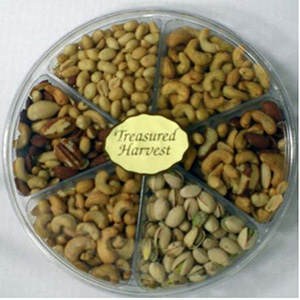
RECALLED – Roasted and Salted Pistachios

July 10, 2013 – Product Recall – Western Mixers Produce & Nuts, Inc. Recalls Pistachios Because of Possible Health Risk.